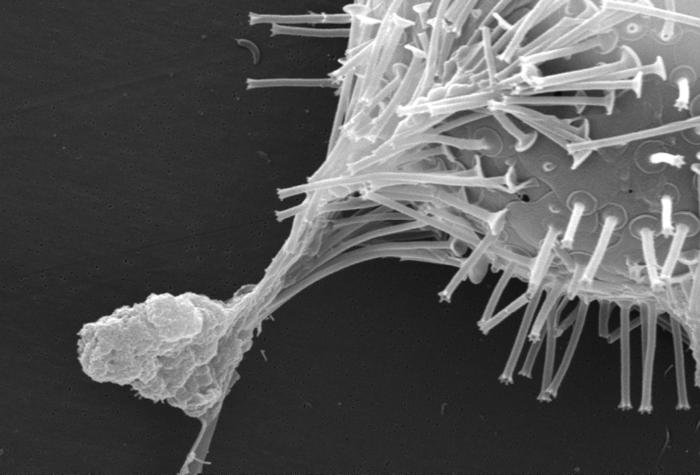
This scanning electron micrograph (SEM) of an untreated water specimen extracted from a wild stream mainly used to control flooding during inclement weather, revealed the presence of unidentified organisms, which included bacteria, protozoa, and algae. In this particular view, a microorganism is featured, the exterior of which is covered by numerous projections imparting an appearance of a sea urchin. This microscopic 'pin cushion' was teathered to its surroundings by a biofilm within which many bacteria, and amoeboid protozoa could be seen enmeshed as well. See PHIL 11682 and 11684, for additional views of this creature under successively greater magnifications. For a colorized version of this image see PHIL 11699.